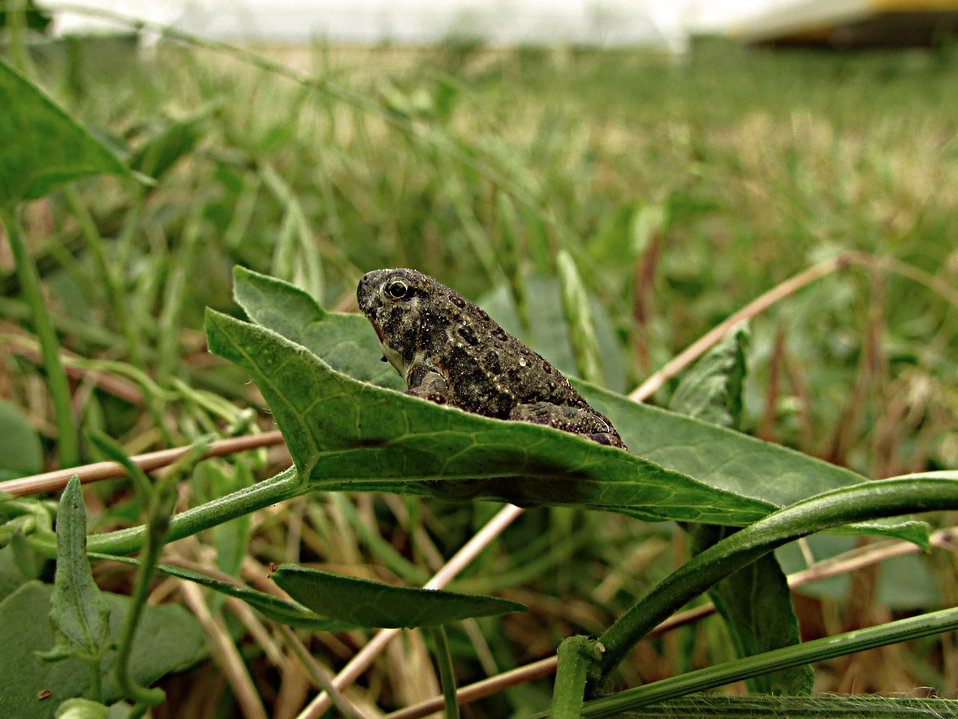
Toadlet

Watch your step at the hatchery! Hundreds of these tiny toads cover the ground right now. This one is about half the size of a penny.